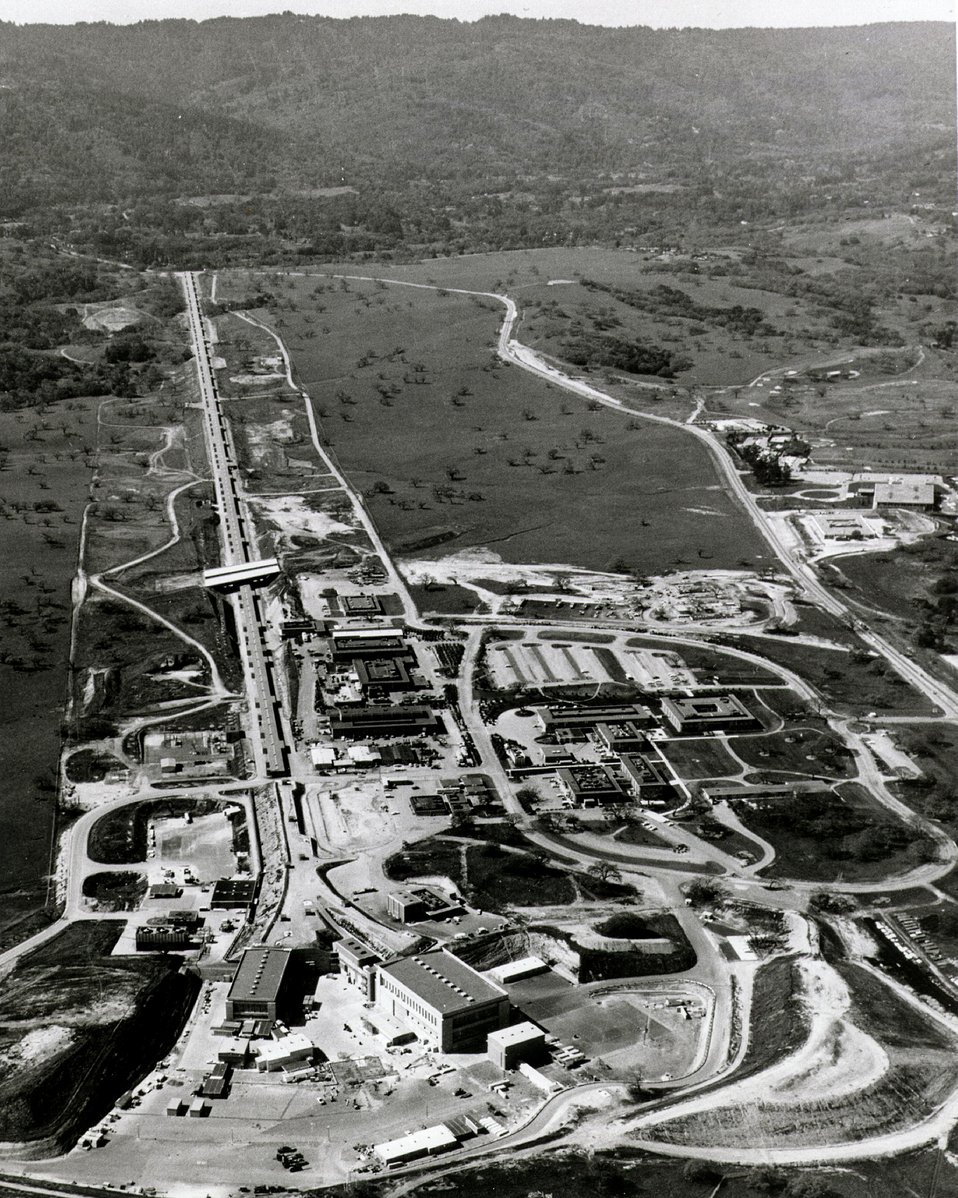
Looking west from the beam switch yard which is in the foreground. Circa 1968.